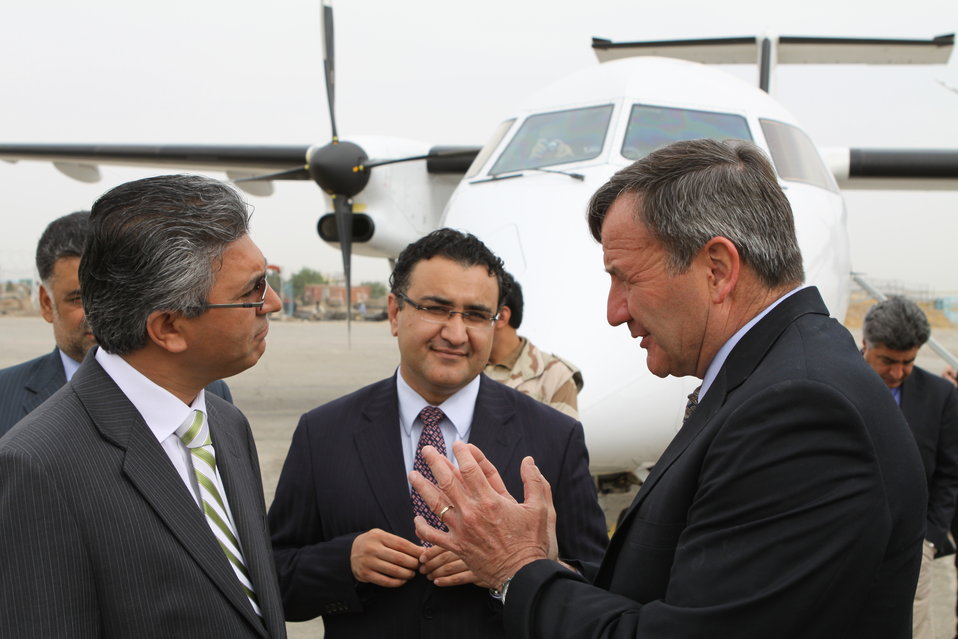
100525 Hirat Marble Conference 033